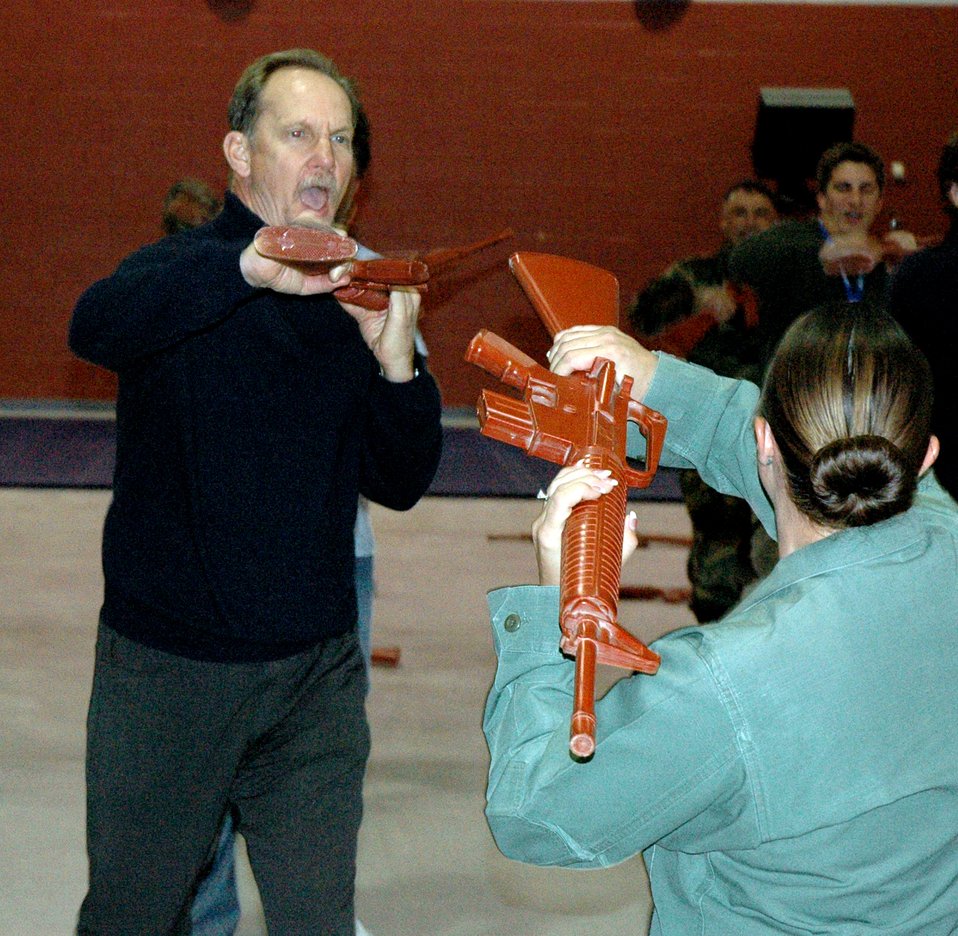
National Civic Outreach Program keeps public informed

Actor Michael O'Neill practices some self-defense tactics with instructor Rhonda Battles using an M-16 training aid while visiting Lackland Air Force Base, Texas, during a National Civic Outreach Program tour. Ms. Battles is with the 343rd Training Squadron.